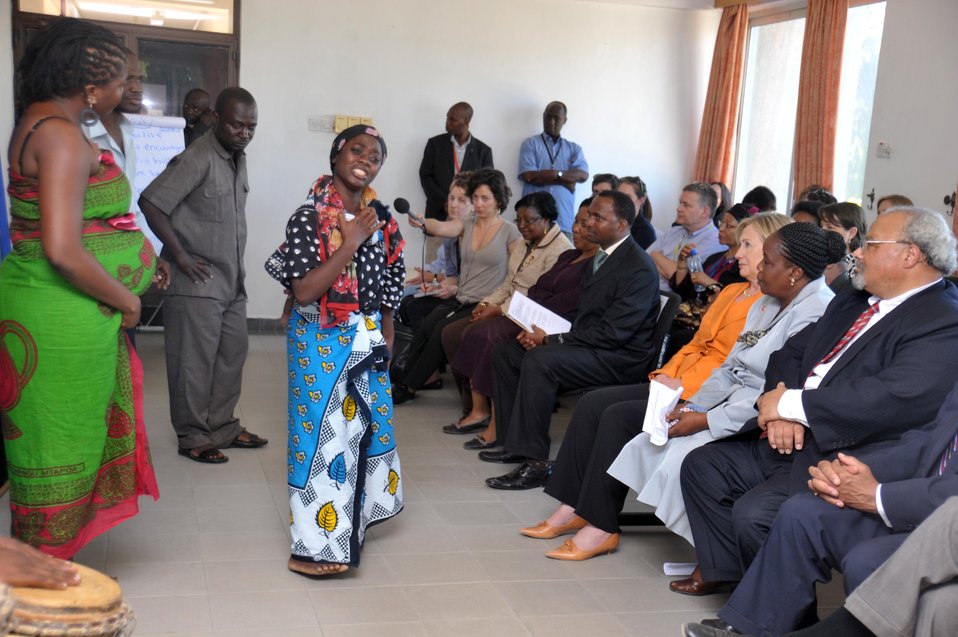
Secretary Clinton Listens to Patients and Health Workers

U.S. Secretary of State Hillary Rodham Clinton listens to patients and health workers, at the Buguruni Health Center in Dar es Salaam, Tanzania, on June 12, 2011.